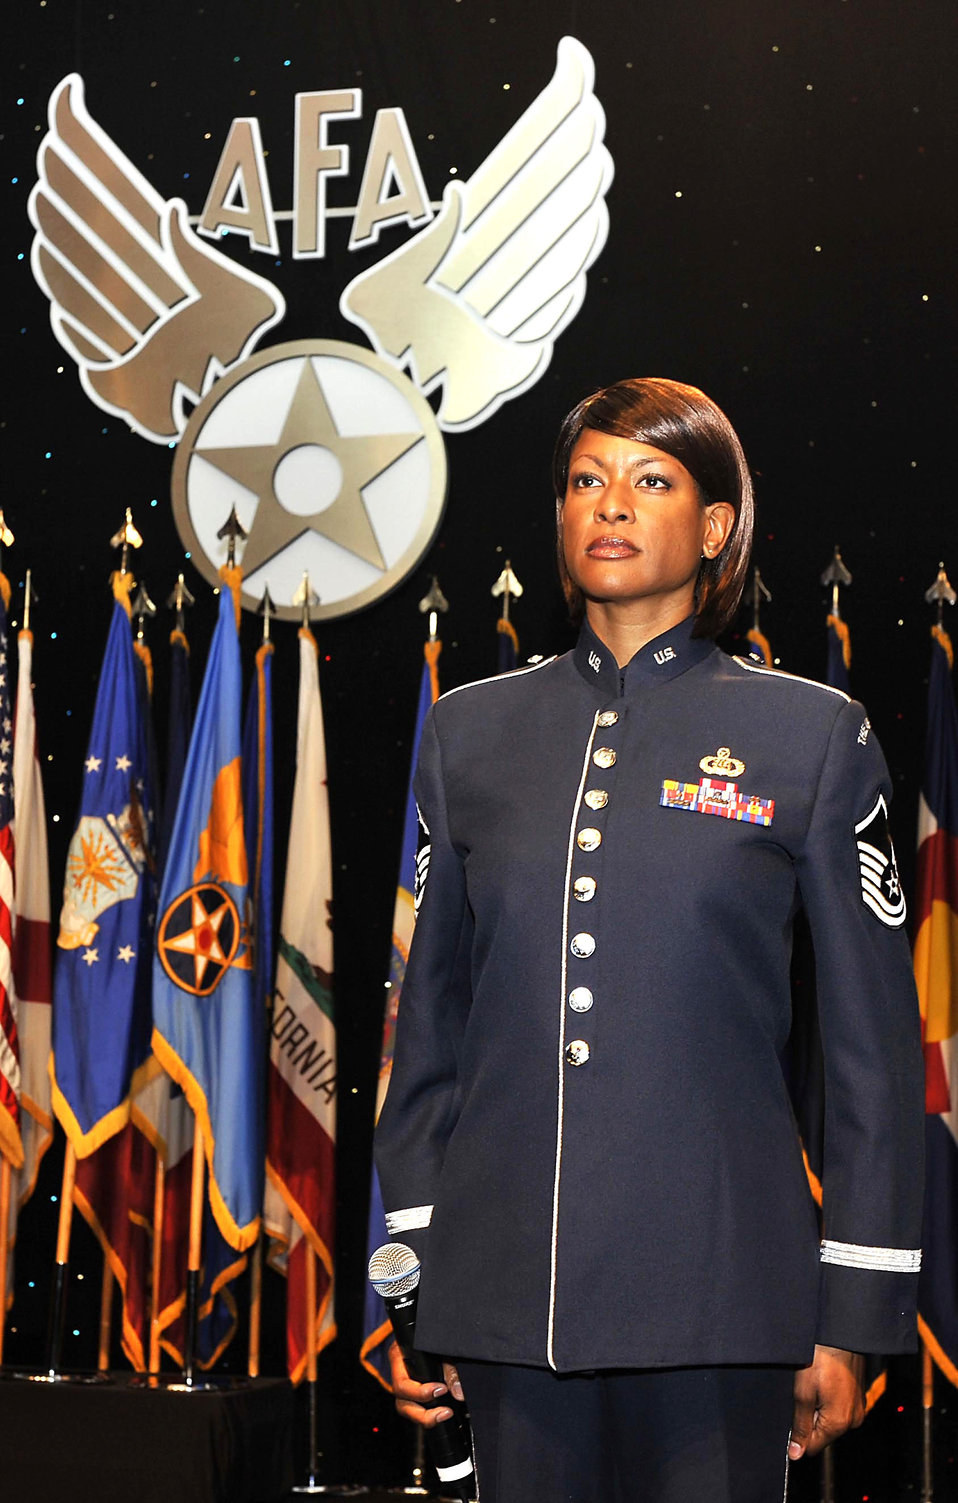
General Schwartz kicks off AFA convention

Master Sgt. Shanie Pruett sings the national anthem during the opening ceremonies of the 2008 Air Force Association Air & Space Conference and Technology Exposition Sept. 15 in Washington D.C. Sergeant Pruett is from U.S. Air Force Band Singing Sergeants.